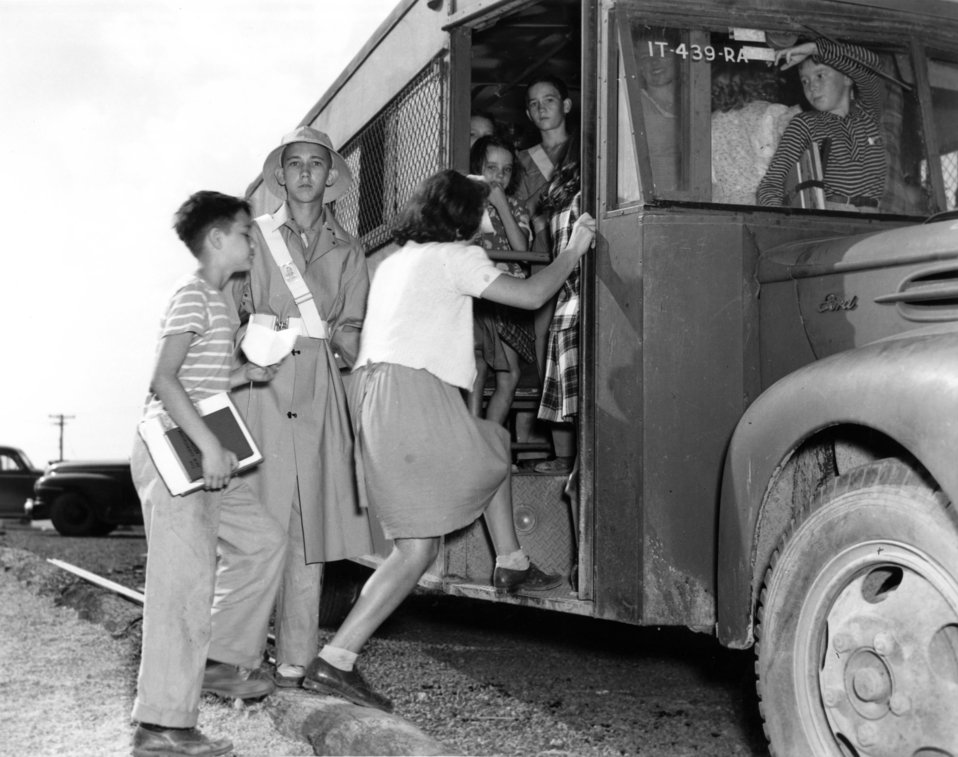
Schools at Oak Ridge